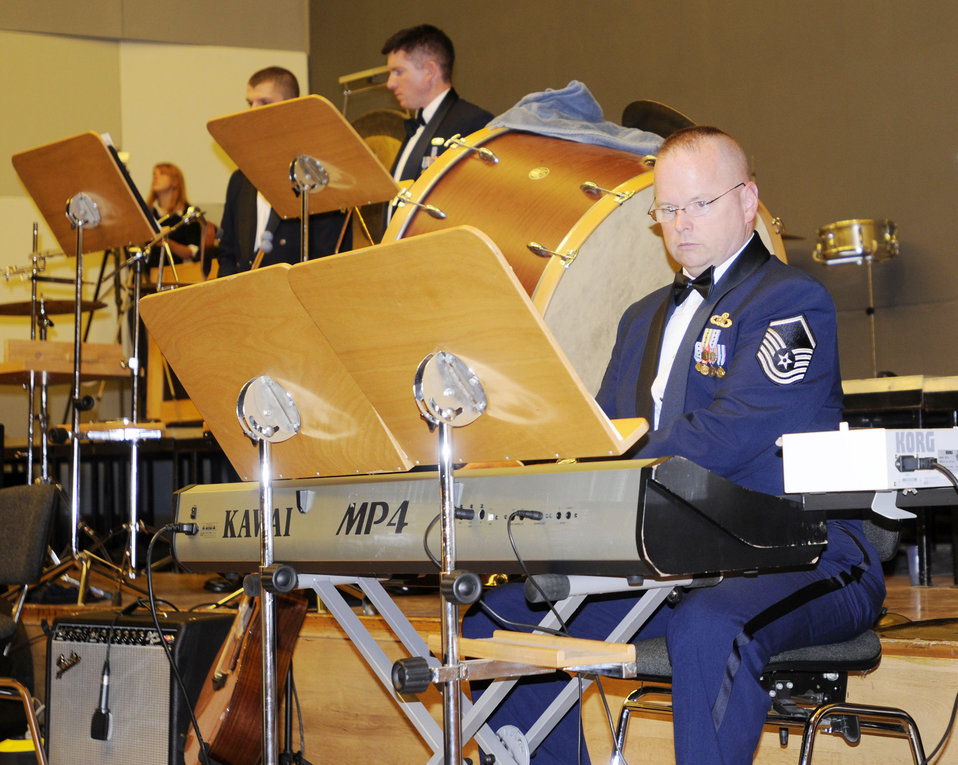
USAFE Band tours Poland

Master Sgt. Neill Herndon plays the keyboard during a U.S. Air Forces in Europe Band concert in Wroclaw, Poland, Oct. 20, 2009. The 41-piece band performed six concerts in the country.